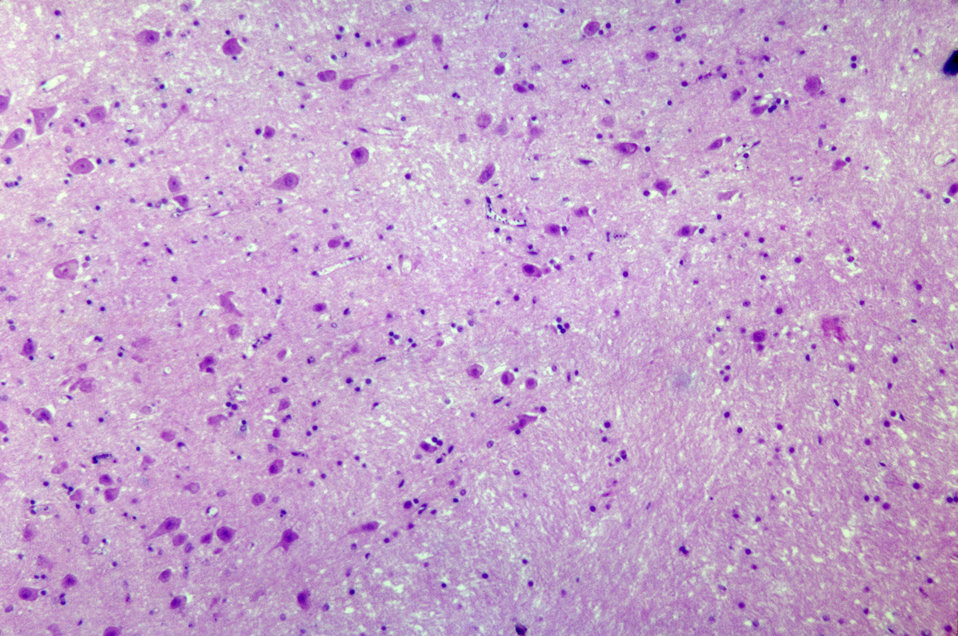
Histopathology of malaria of brain due to Plasmodium falciparum